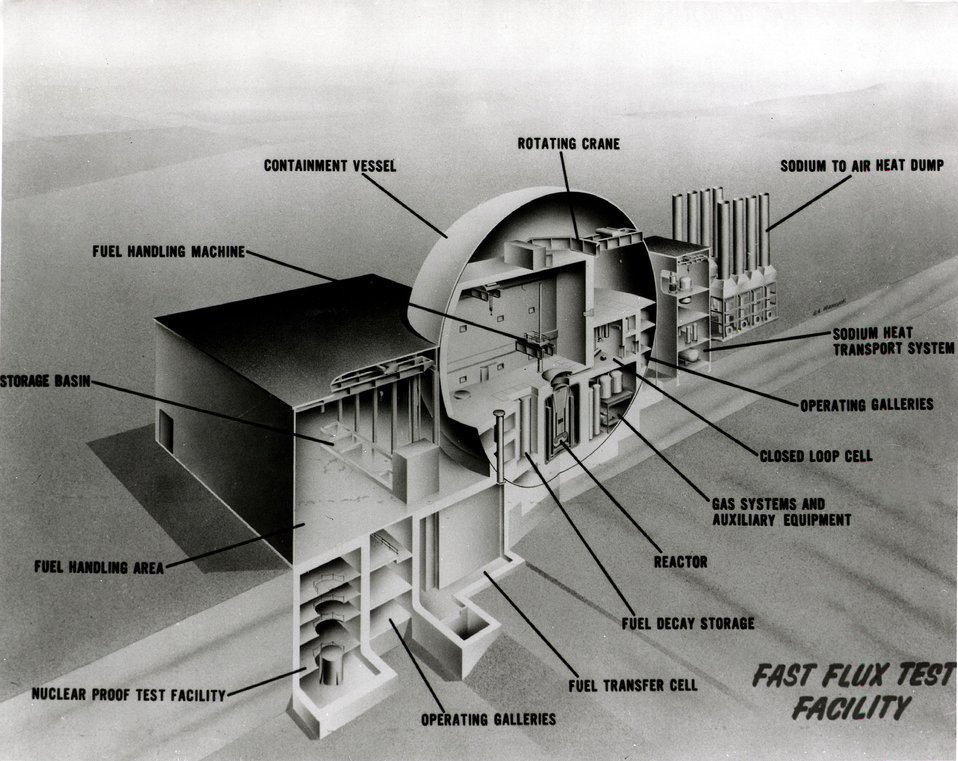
This cross-section drawing delineates the features of the Fast Flux Test Facility under construction. c. 1972.